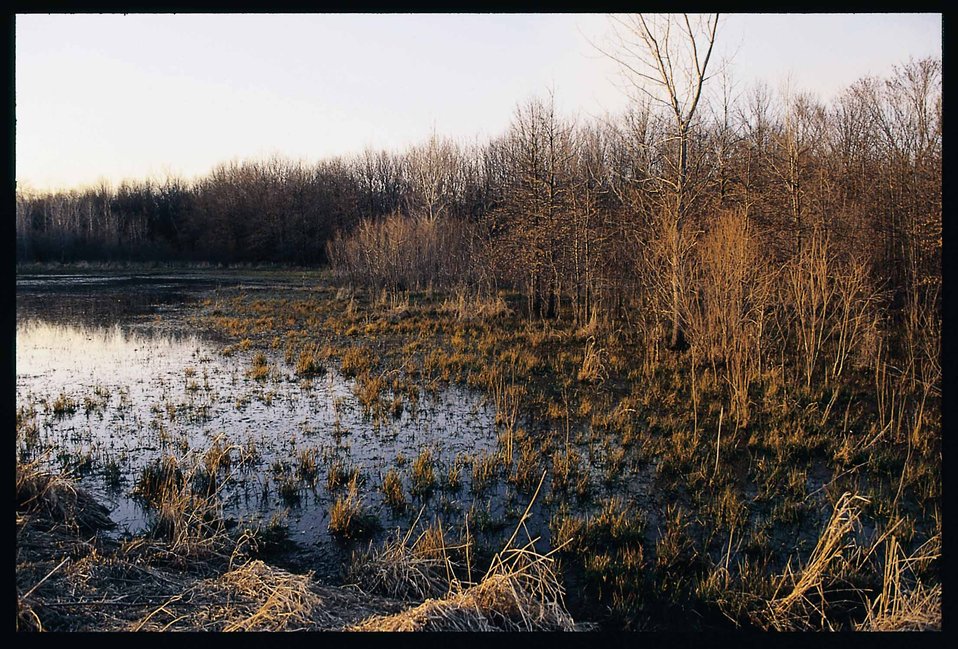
Habitat for ducks and geese on a restored wetland in Van Buren County, Iowa.